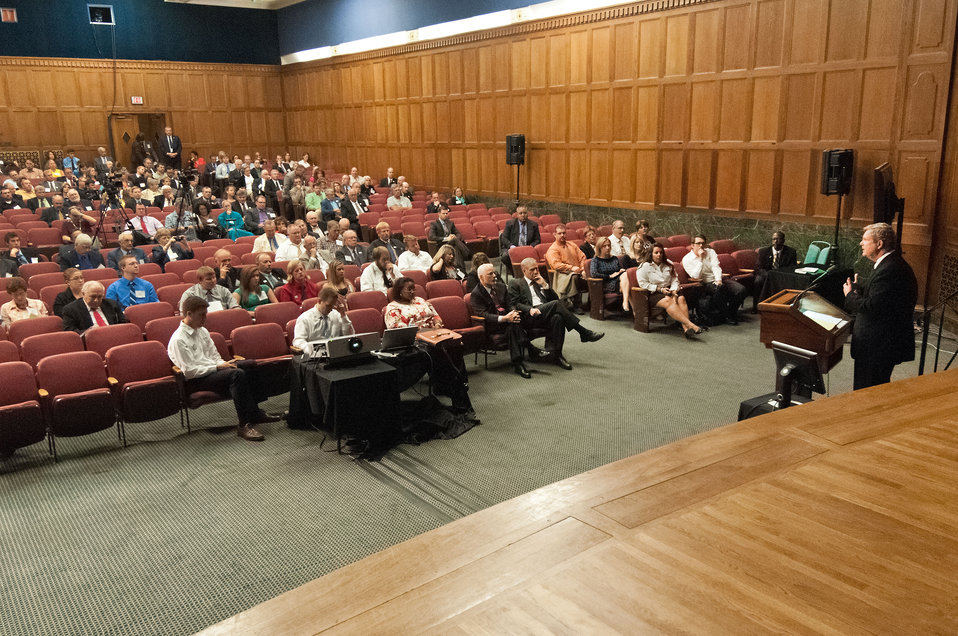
Agriculture Secretary Tom Vilsack addressed the National Farmers Union at the U.S. Department of Agriculture (USDA) in Washington, D.C. on Monday, Sept. 10, 2012. Secretary Vilsack discussed the economics of agriculture, conservation, exports, Rural America and the 2012 Farm Bill.